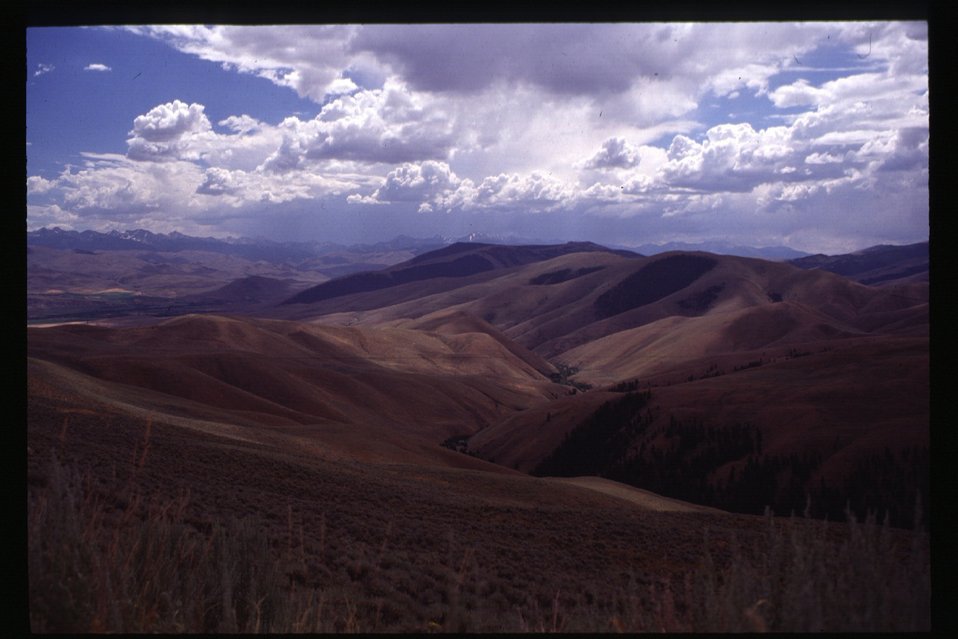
Rangeland Salmon Field Office UCSC Upper Columbia Salmon Clearwater District